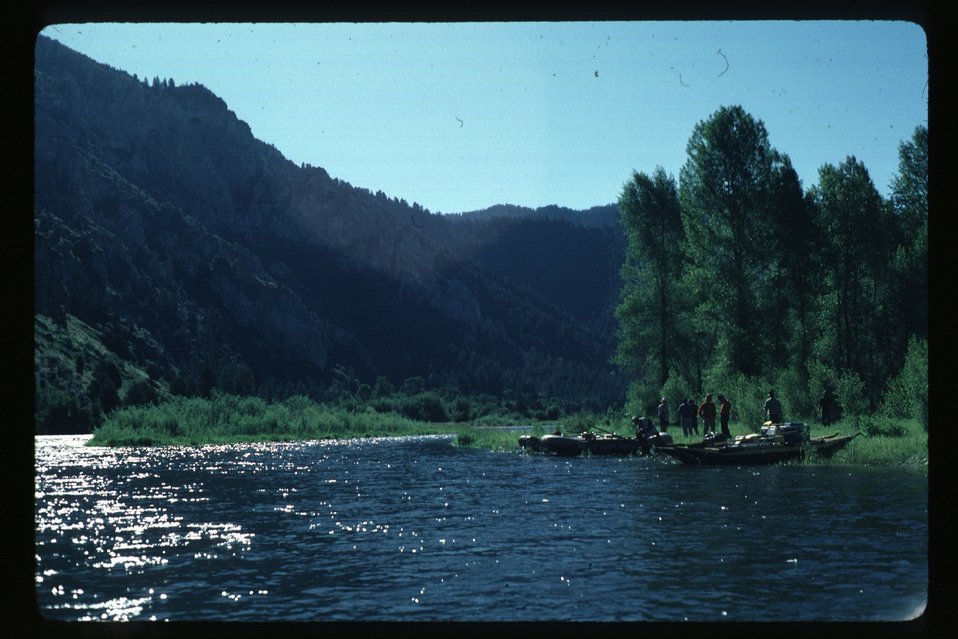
South Fork of Snake River USRD Upper Snake River District